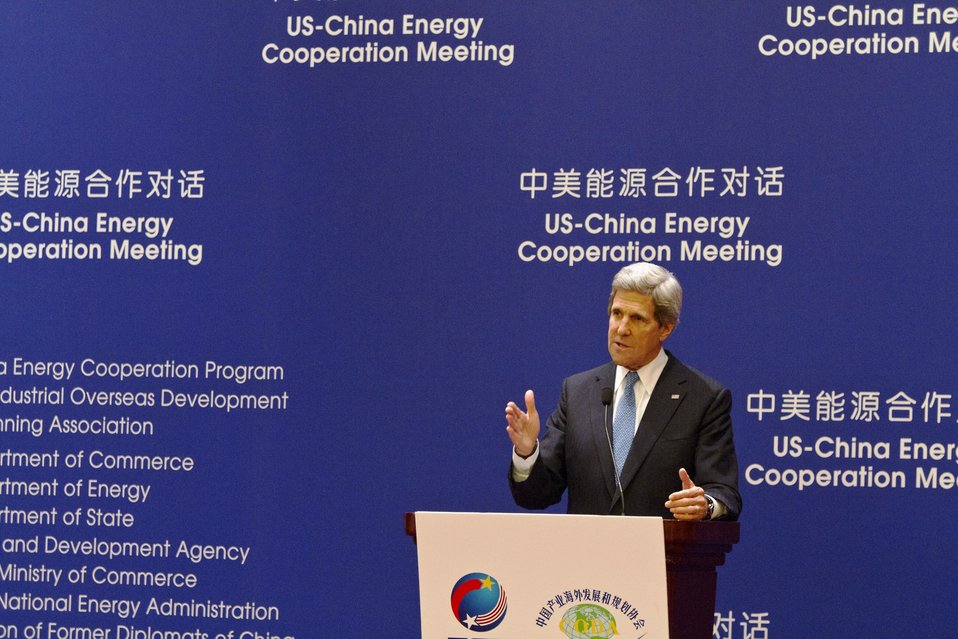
Secretary Kerry Delivers Remarks at the U.S.-China Energy Cooperation Meeting

U.S. Secretary of State John Kerry delivers remarks at the U.S.-China Energy Cooperation Meeting in Beijing, China, on April 13, 2013.